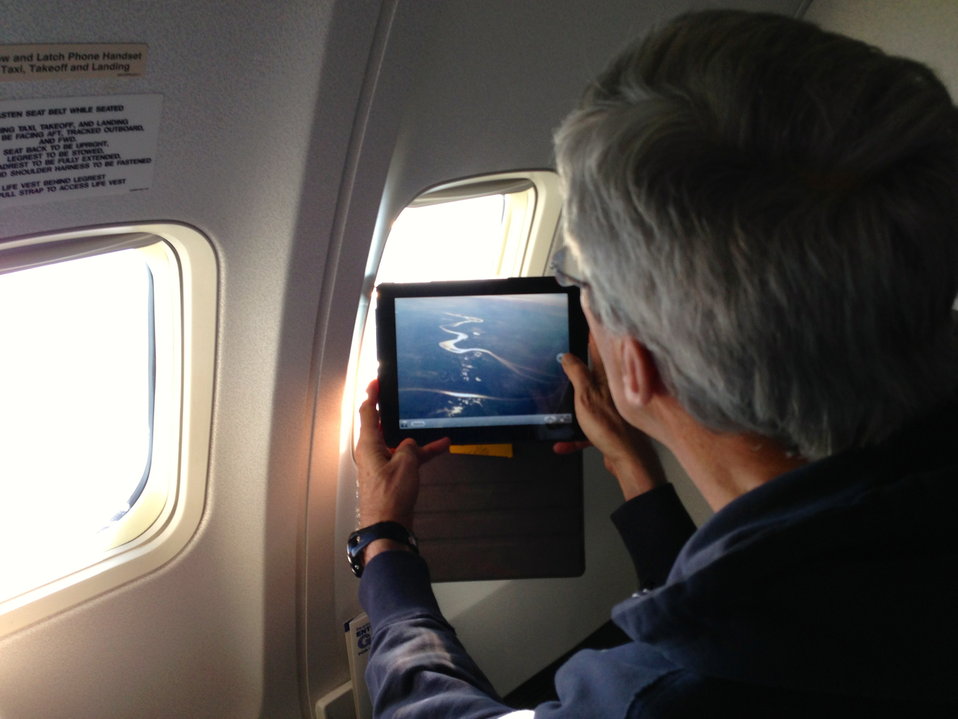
Secretary Kerry Photographs Mekong River

U.S. Secretary of State John Kerry takes a picture of the Mekong River as he prepares to fly over Vietnam, where he served with the U.S. Navy, en route to an ASEAN ministerial meeting in Bandar Seri Begawan, Brunei, on July 1, 2013.